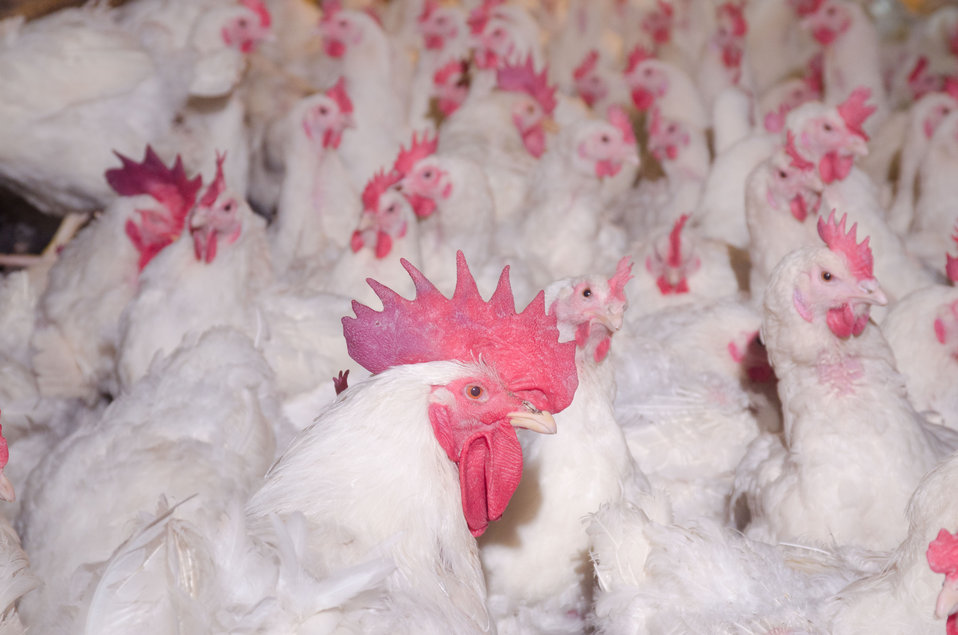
Some of the 17,000 poultry at Seldom Rest Farms located, north of Myerstown, PA, on Wednesday, April 20, 2011. The chickens are kept in a two story chicken house and produce approximately 2.5 million chicks each year. To supplement their electrical needs, they chose a contractor who knew about United States Department of Agriculture (USDA) Rural Energy for America program (REAP) grants and helped them through the application process. The farm was awarded a $152,000 grant (25% of the cost). to install the 1001kW solar array to power their farm, a neighboring farm and homes on the local electrical grid. The 240 solar panels were ground mounted with 5-foot clearance underneath to allow sheep to graze and rest underneath protected from the rain, sun or snowfall. Ten inverters change the DC electrical energy from the panels into AC energy that goes into the local power grid. Spring statistics show it is producing more than expected. REAP offers grants and/or loan guarantees for the purchase and installation of renewable energy generating systems and for energy efficiency improvements.